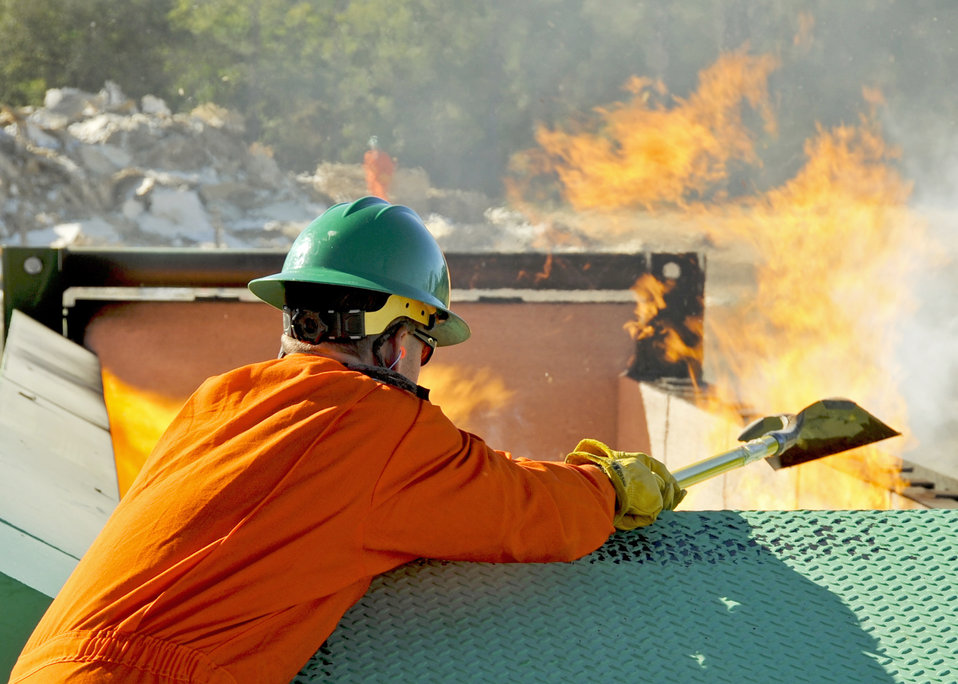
Air burners at Eglin

Fire spills over the side of the 46th Test Wing's new air curtain incinerator on a gusty day Oct. 31, 2010 at Eglin Air Force Base, Fla.